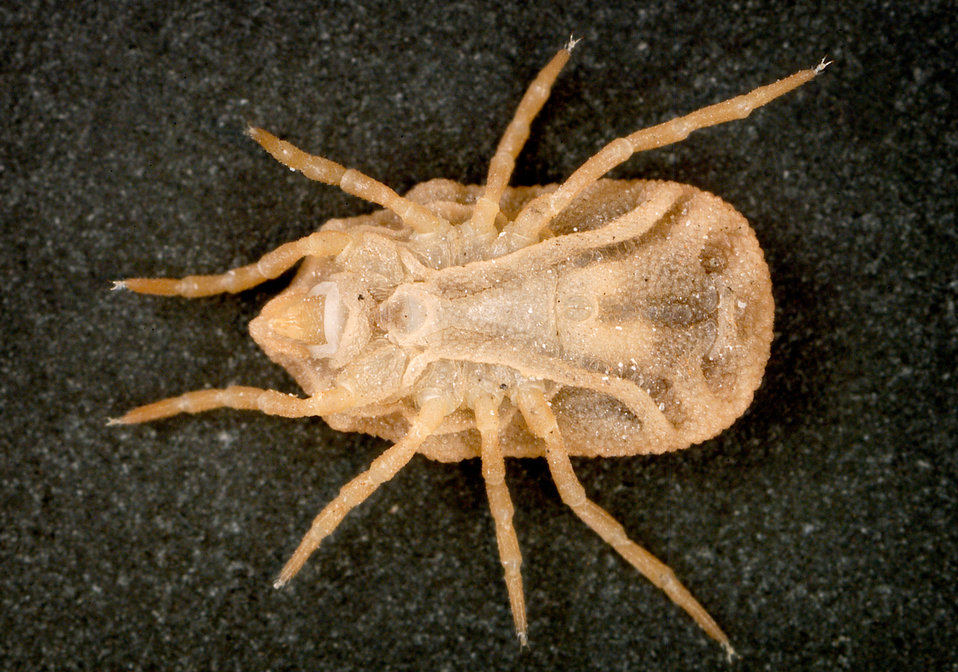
This is a ventral view of the 'soft tick' Carios kelleyi, formerly Ornithodoros kelleyi, or the 'Bat Tick'.